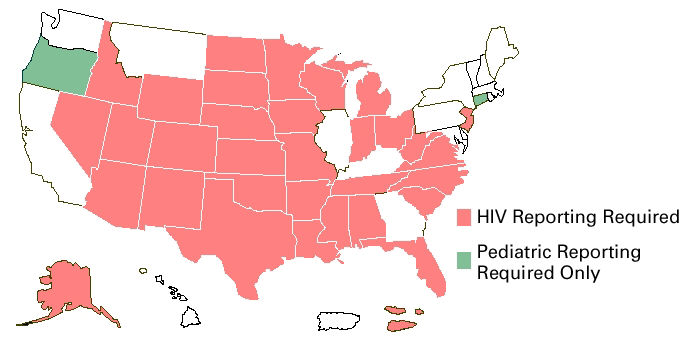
States with name-based human immunodeficiency virus (HIV) case surveillance--United States, November 1999.